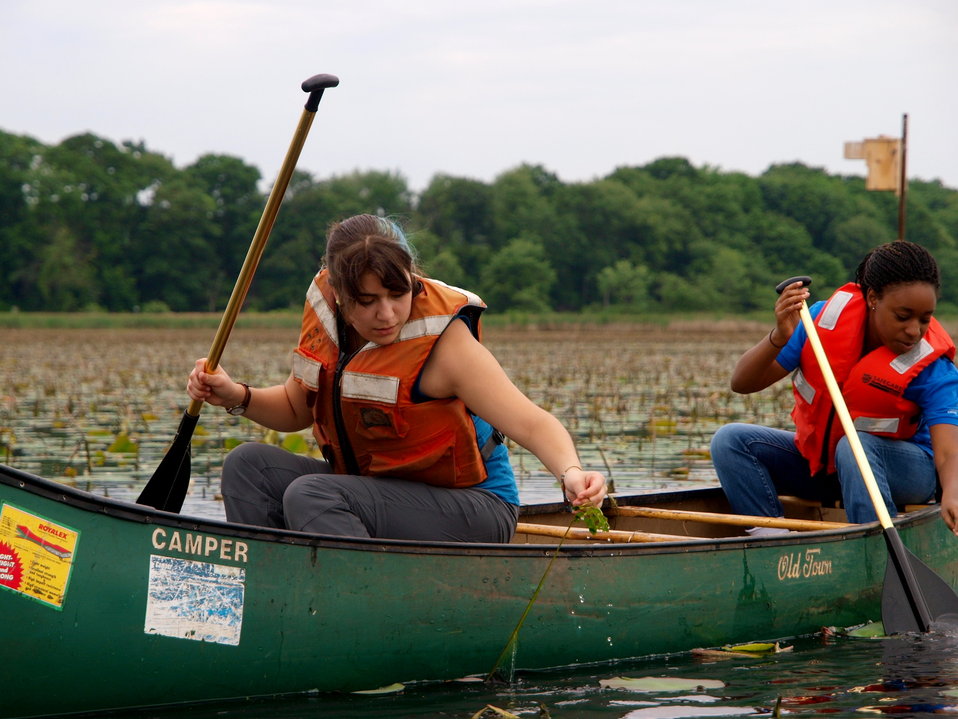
Picking Waterchestnuts

Elizabeth picks an invasive waterchestnut from the Upper Impound at Great Meadows, Concord Unit.